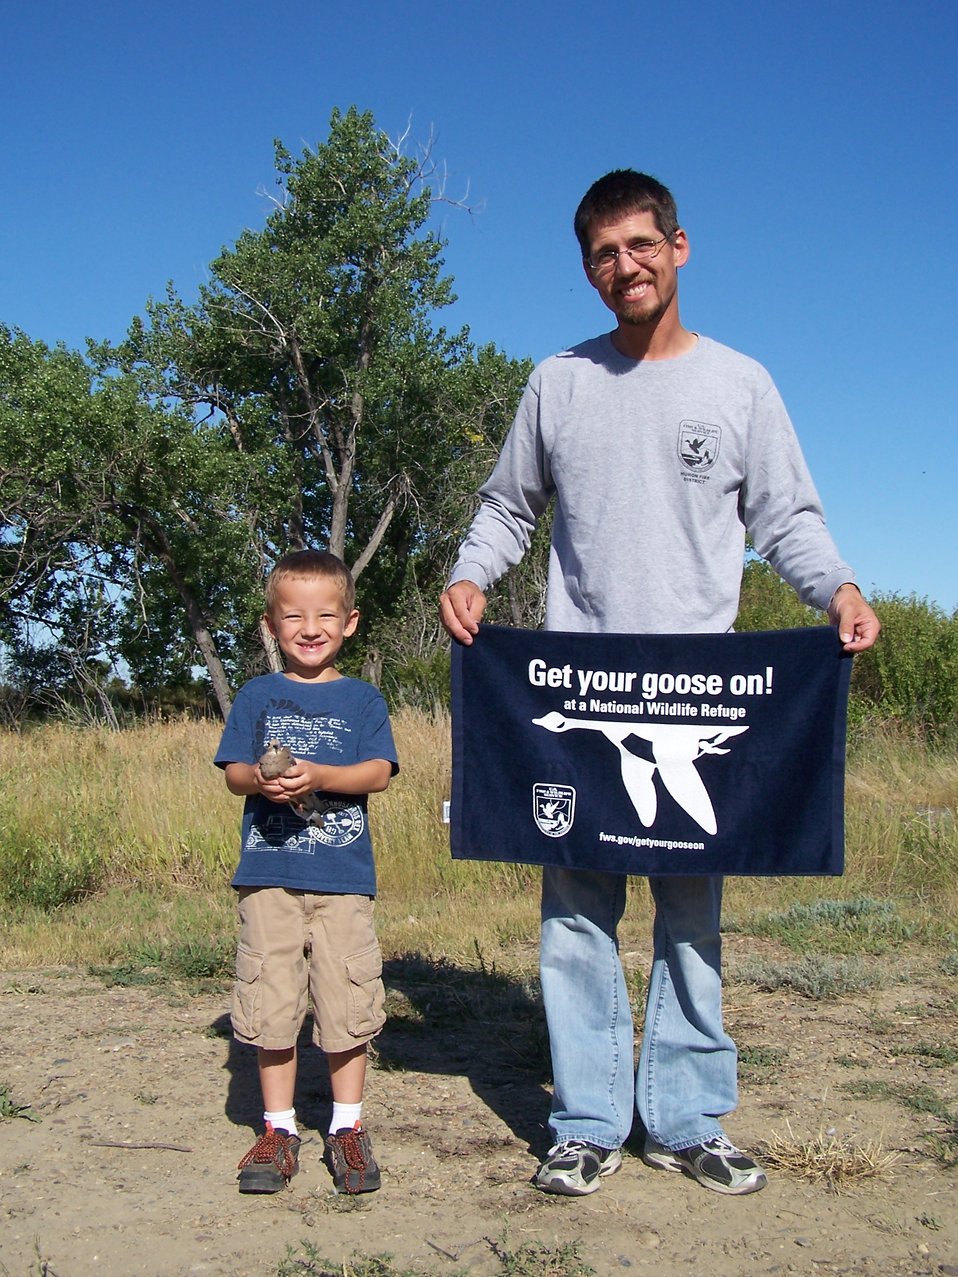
Get Your Goose On! - With the Family

Bowdoin NWR Assistant Refuge Manager Todd Boonstra and his son Jack Get Their Goose On while dove banding